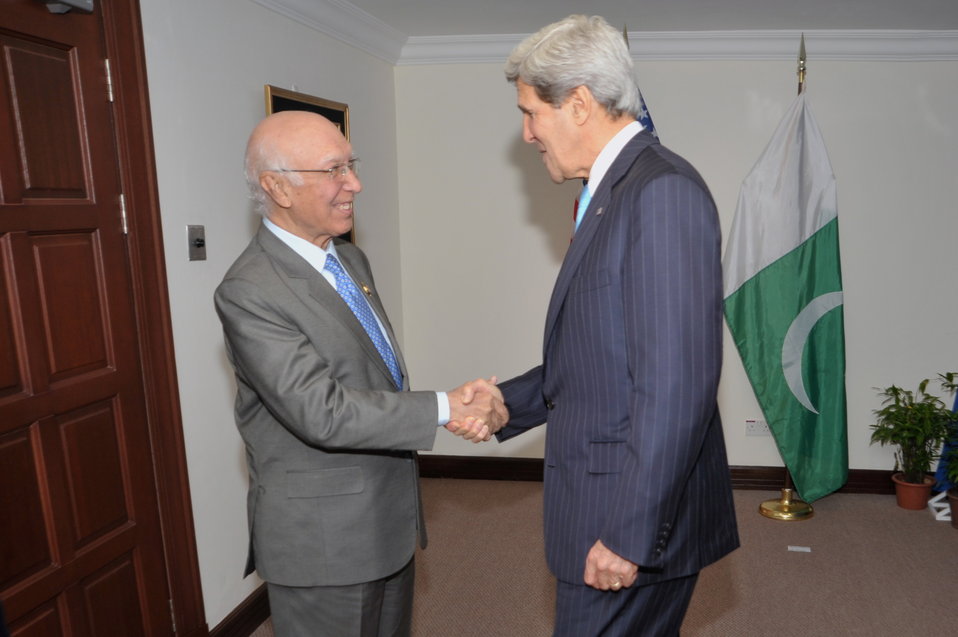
Secretary Kerry Meets With Pakistani Advisor to the Prime Minister Aziz

U.S. Secretary of State John Kerry greets Pakistani Advisor to the Prime Minister for National Security and Foreign Affairs Sartaj Aziz before a bilateral meeting in Bander Seri Begawan, Brunei, on July 2, 2013.